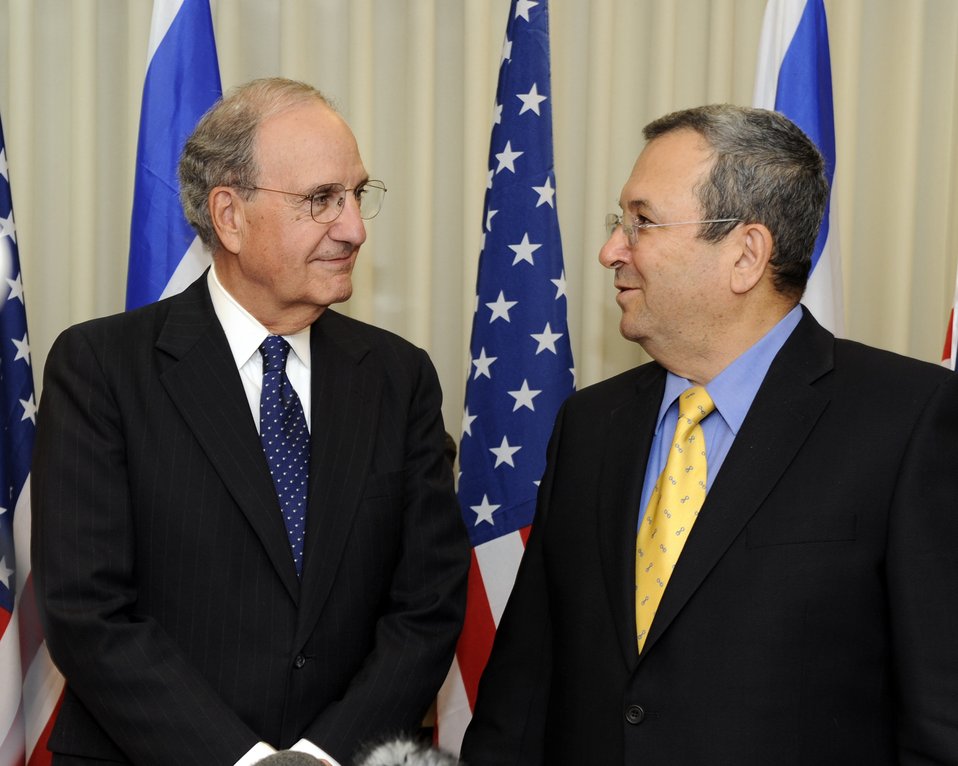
U.S. Special Envoy George Mitchell Meets With Israeli Defense Minister

U.S. Special Envoy George Mitchell with Israeli Minister of Defense Ehud Barak before their meeting in Tel Aviv, Israel July 26, 2009.